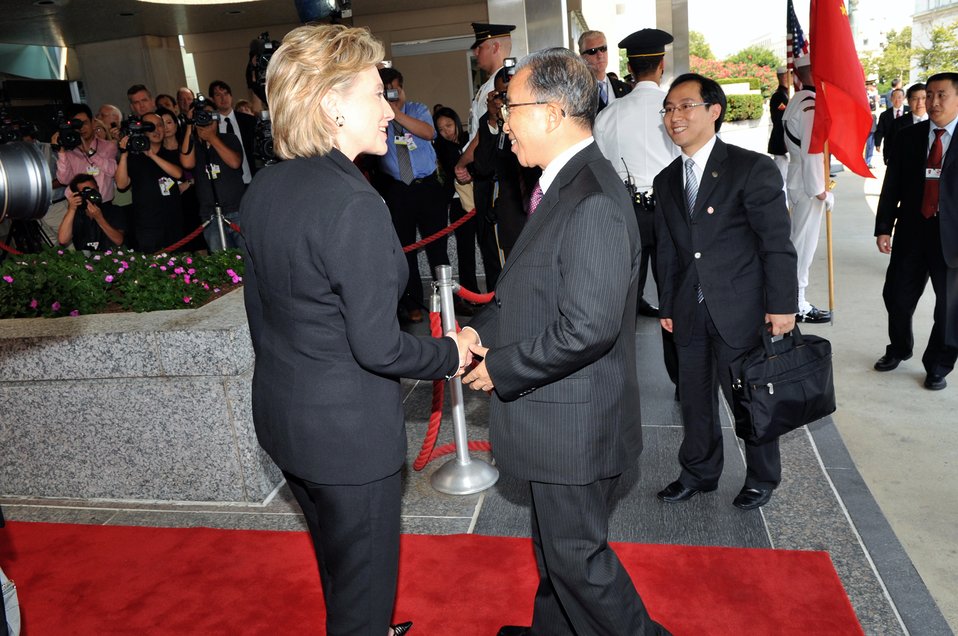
Secretary Clinton Greets Chinese State Councilor

U.S. Secretary of State Hillary Rodham Clinton greets Chinese State Councilor Dai Bingguo upon arrival at the U.S. Department of State in Washington, DC July 27, 2009.